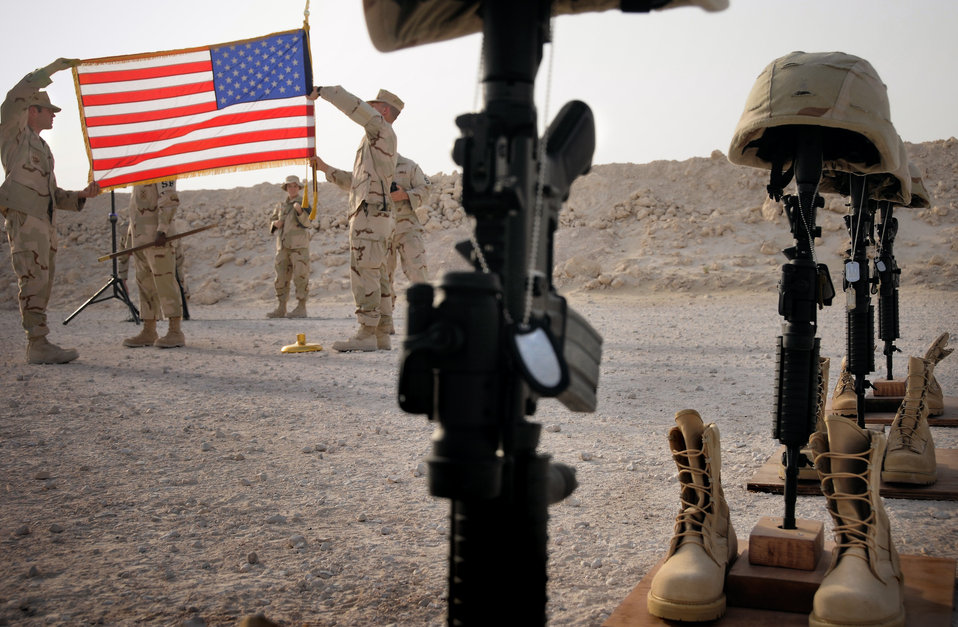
Paying respect

Airmen at a base in Southwest Asia held a